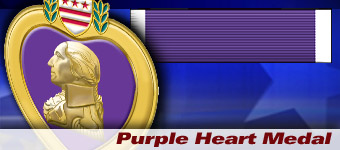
Purple Heart